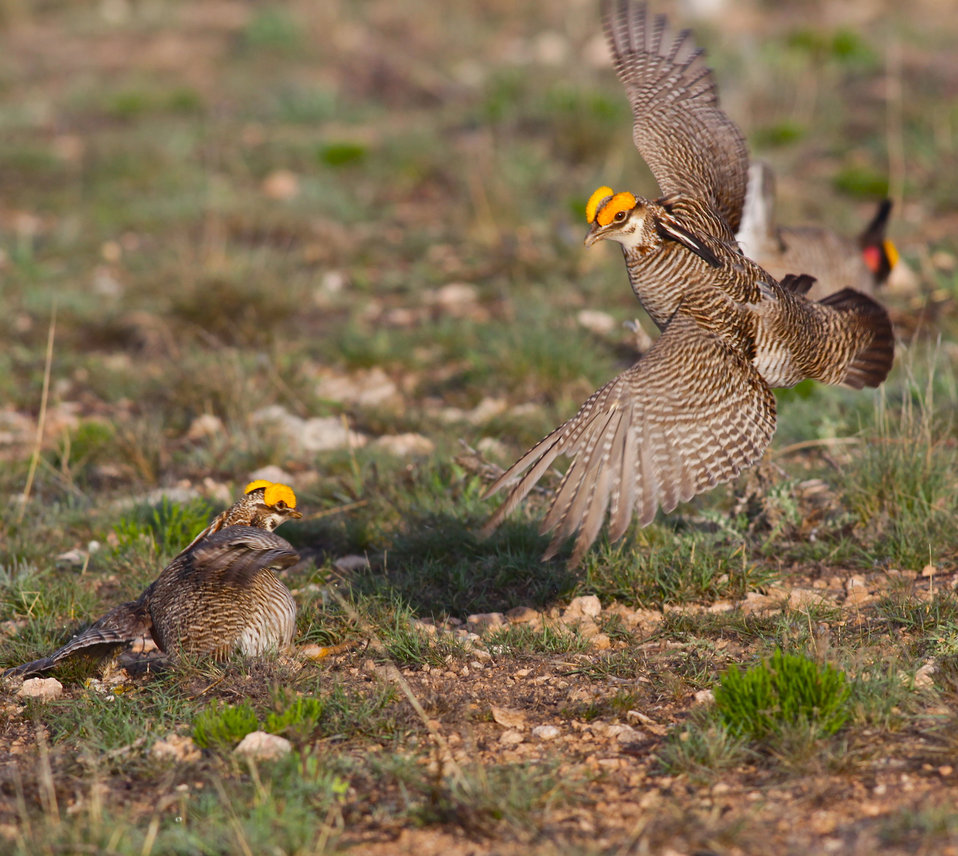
Species1

The lesser prairie-chicken is a grassland-nesting bird of the southern Great Plains.